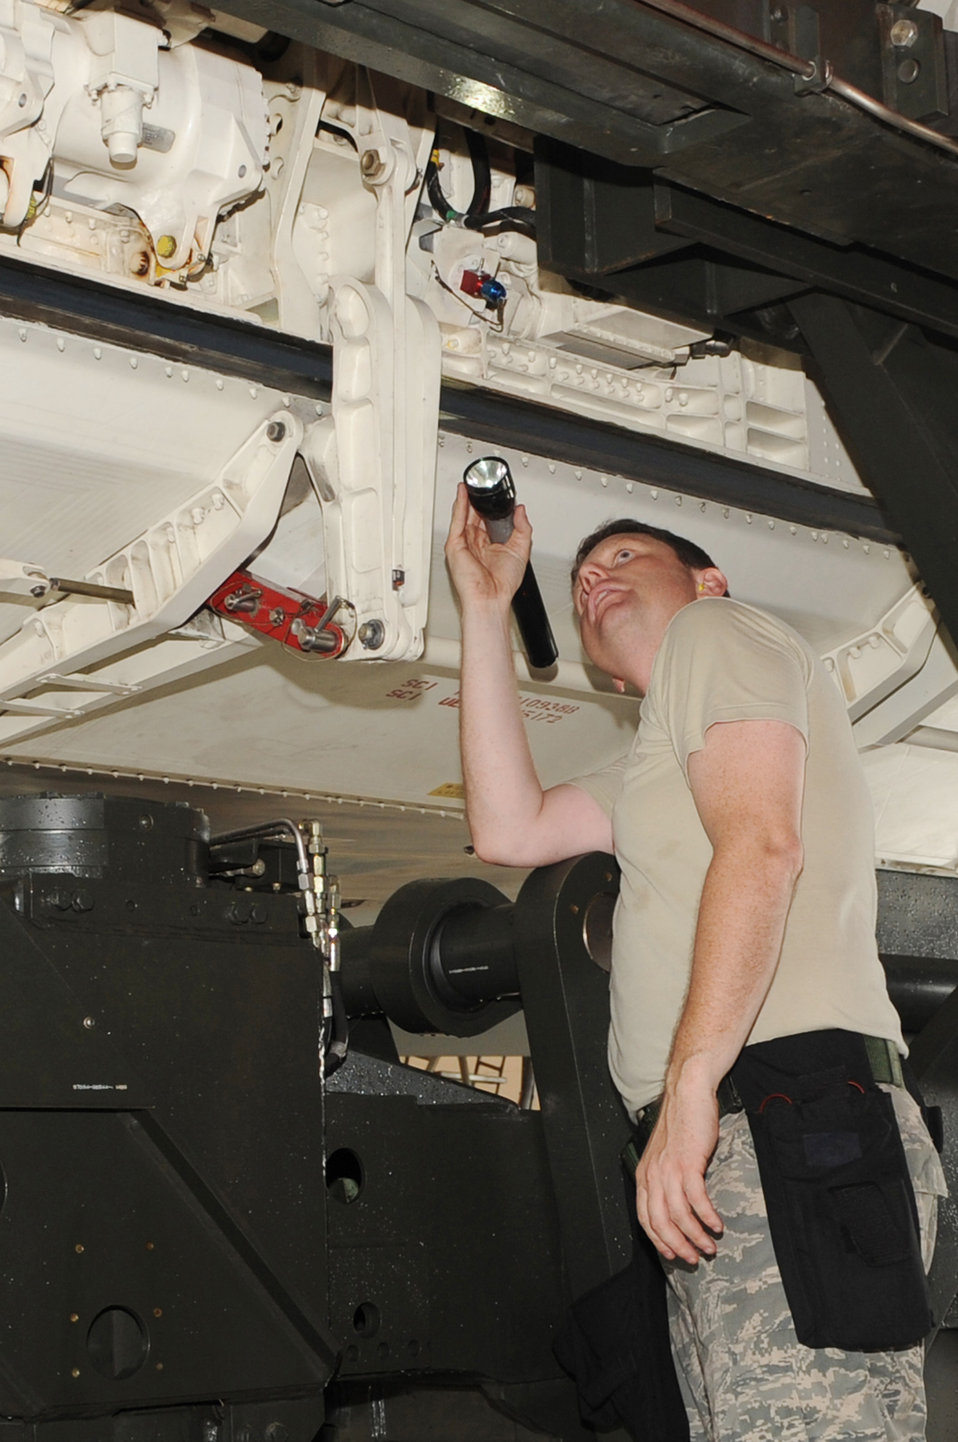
Whiteman Airmen test nuclear weapon mission

Tech. Sgt. Damen Cipolla inspects the rotary launch assembly as it's being lifted into a B-2 as Senior Airman Gregory Lowe runs the controls to lift the assembly into place Aug. 17, 2009 at Whiteman Air Force Base, Mo. This Inspection is one of the first inspections to fall under Air Force Global Strike Command since the command stood up. Sergeant Cipolla is assigned to the 509th Aircraft Maintenance Squadron.